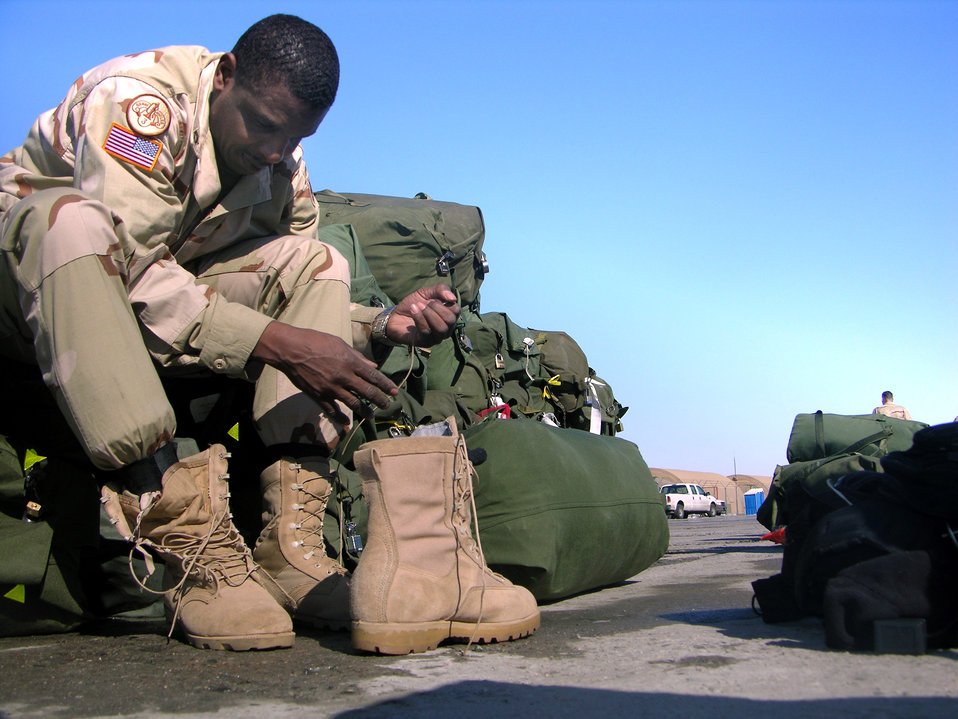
Manas Airmen handle transient surge

MANAS AIR BASE, Kyrgyzstan -- Army Sgt. 1st Class Harold Washington sits atop a mound of duffle bags while changing his boots. More than 1,500 transient troops made their way through the base Feb 22 to 26, pushing the base to a 190 percent occupancy rate. Officials with the 376th Expeditionary Services Squadron shut down the base fitness facility as well as various recreational areas to house the visitors.